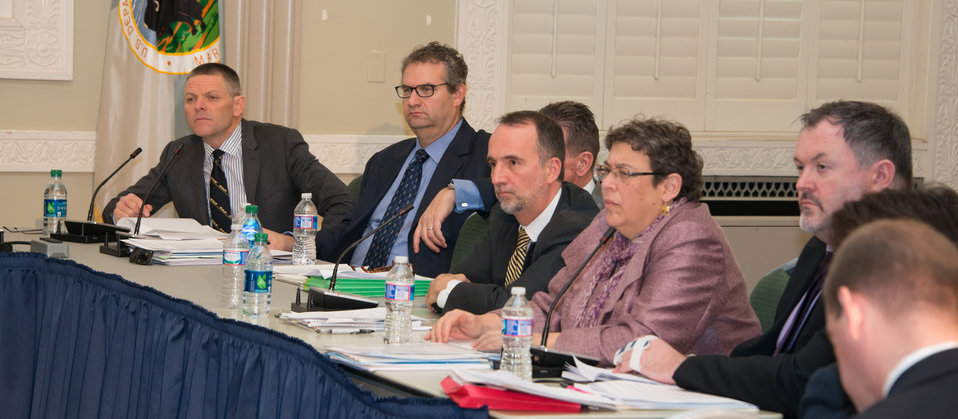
Public Meeting of Advisory Council on Wildlife Trafficking

Members of the Advisory Council on Wildlife Trafficking

From left to right: Patrick J. Bergin, CEO, African Wildlife Foundation; Tod H. Cohen,
Vice President and Deputy General Counsel, eBay Inc.; John T. Webb; Marcus A. Asner, Partner, Arnold & Porter LLP; Susan R. Lieberman; Crawford J. Allan,
Senior Director, TRAFFIC, Washington, D.C.